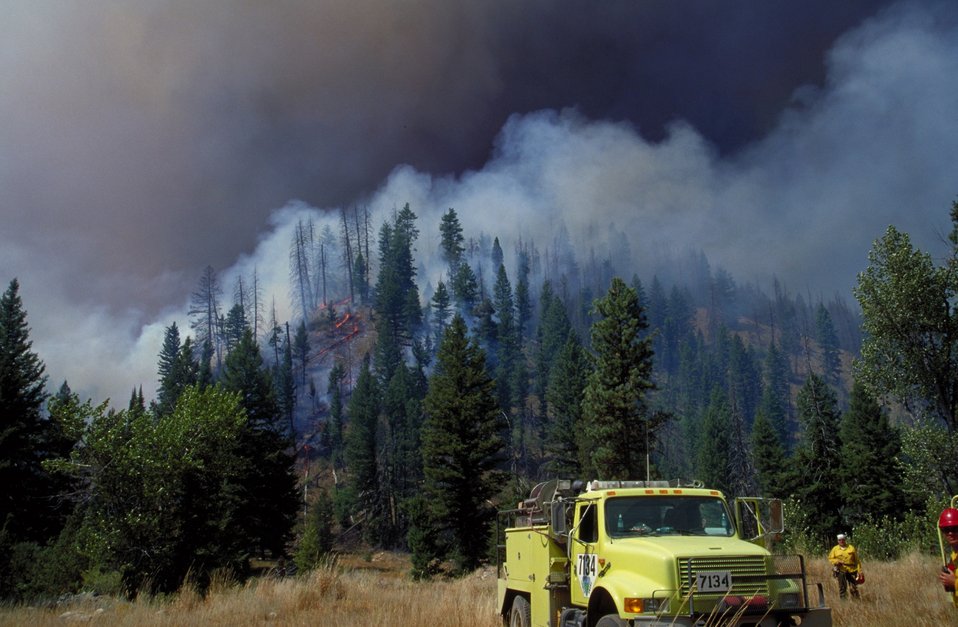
Fire on horizon Smokey sky Fire Season 2000 Lower Snake River District LSRD